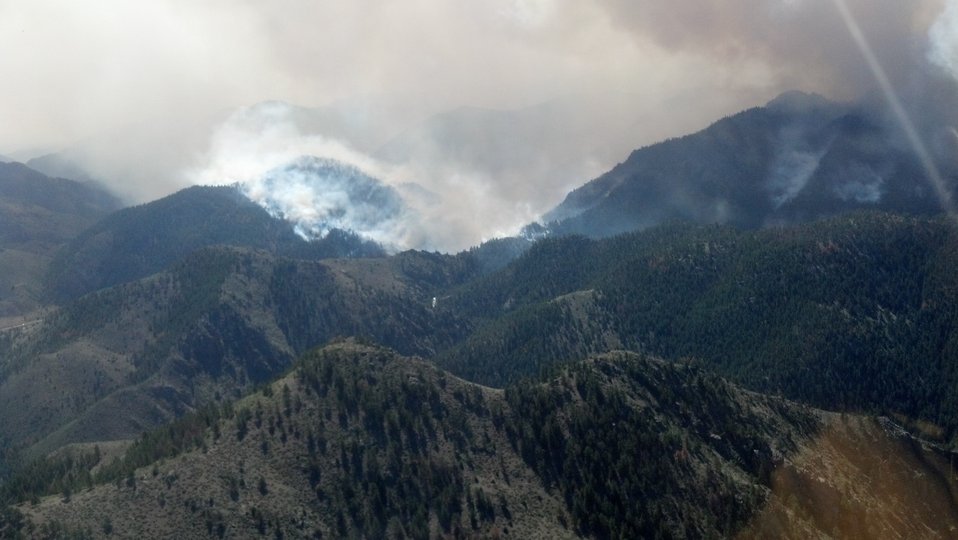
A view of the active Northwest perimeter of the High Park Wildfire on the Arapaho and Roosevelt National Forests and Pawnee National Grassland on Thursday, June 10, 2012. The High Park Wildfire located approximately 15 miles west of Fort Collins, CO has consumed over 65,738 acres of forest and grassland with approximately 189 homes destroyed. Over 1,773 personnel from the U.S. Forest Service (FS), state and local resources are fighting the wildfire and have achieved 55% containment as of June 20, 2012. The High Park Wildfire began on June 9. 2012 because of a lightening strike on private land.